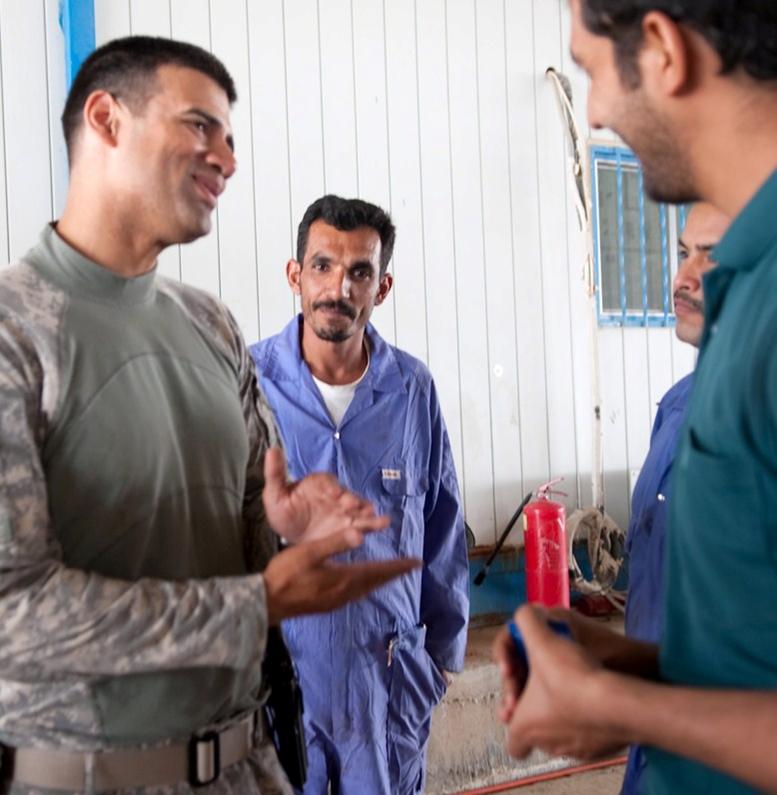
Ali Airmen and Iraqi soldiers team up to keep electricity flowing

Tech. Sgt. Nelson Reyes discusses maintenance schedules with Iraq Army power production technicians April 20, 2010, at Camp Ur, Iraq. Sergeant Reyes is a member of the Logistics Military Advisory Team that facilitates training visits by Ali Base Airmen to Camp Ur, Iraq.